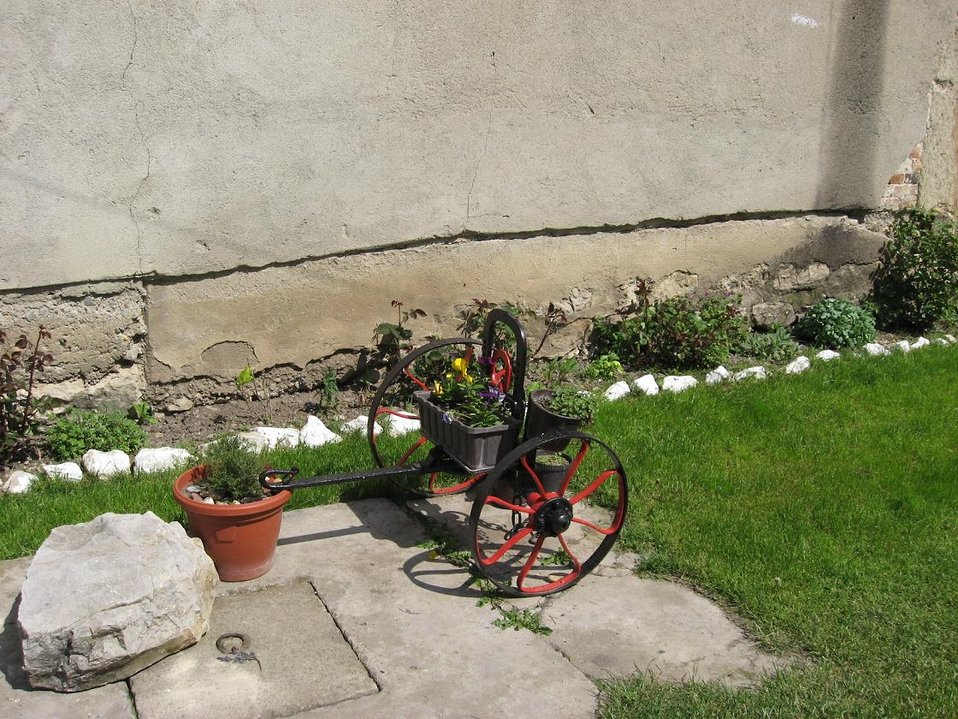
Српски / srpski: Etno motiv iz sela Donje Krnjino.